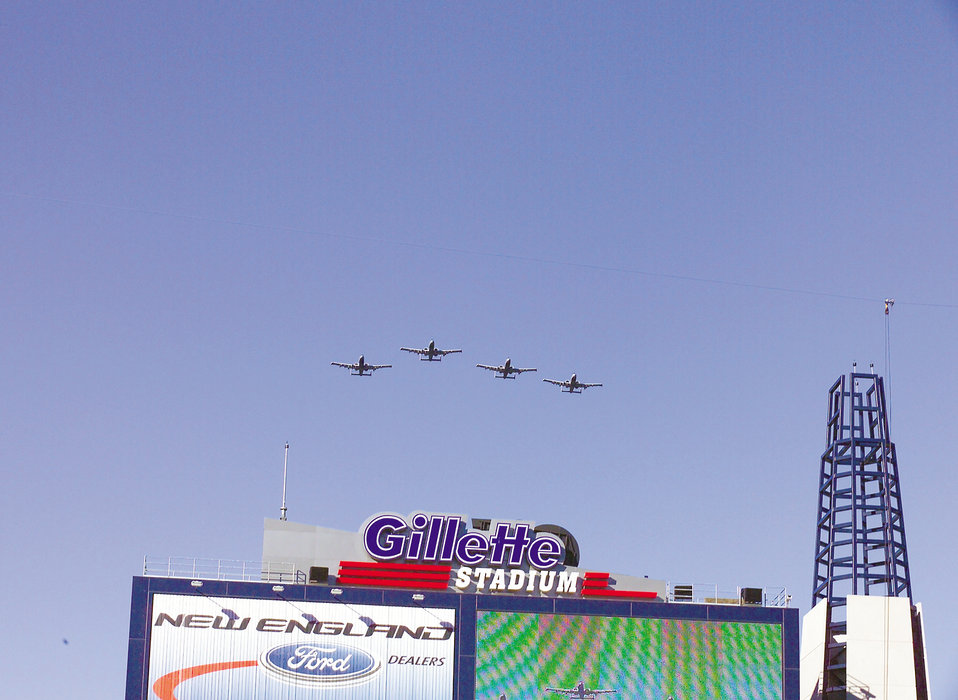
Patriots salute war on terrorism veterans

FOXBORO, Mass. -- A-10 Thunderbolt IIs from the 104th Fighter Wing at Barnes Air National Guard Base, Mass., fly over Gillette Stadium here during the pregame ceremony Dec. 27. The New England Patriots football team hosted more than 75 servicemembers from all of the U.S. services at the game to show their appreciation for those who deployed overseas supporting operations Enduring Freedom and Iraqi Freedom.